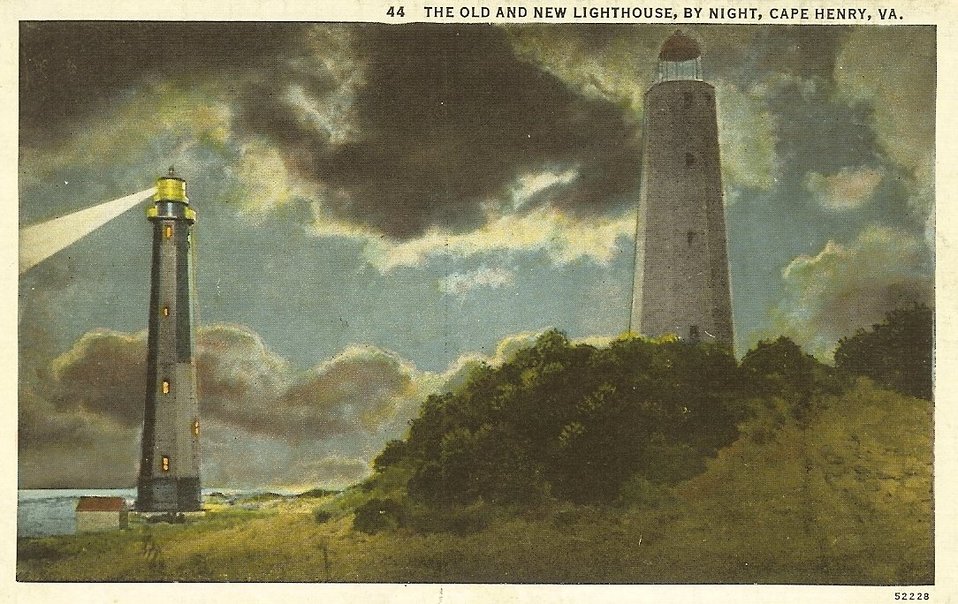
The old and new lighthouse at Cape Henry.